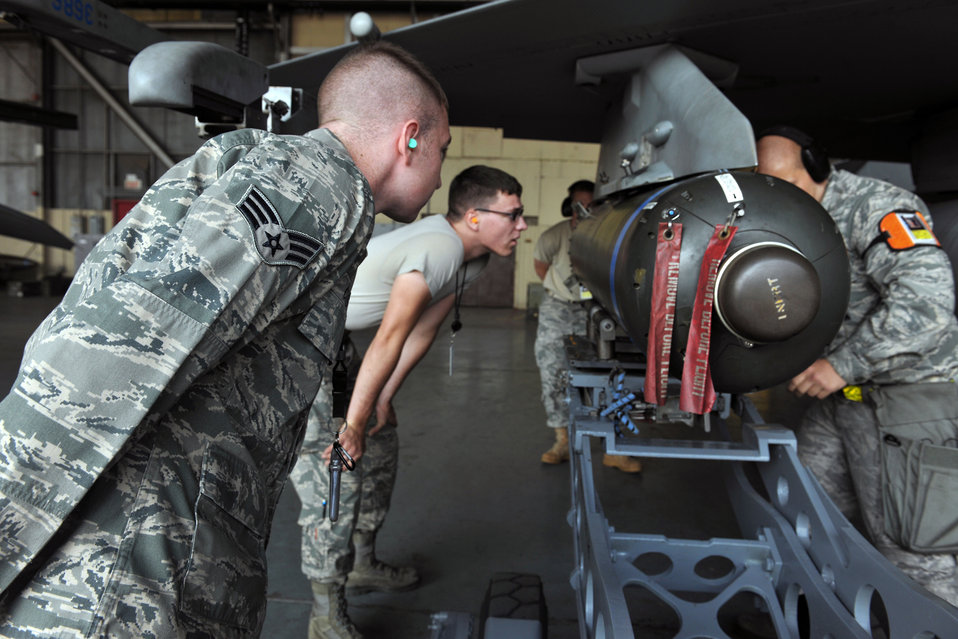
Load crew evaluation

Members of a load crew participate in an evaluation June 28, 2011, at Kunsan Air Base, South Korea.